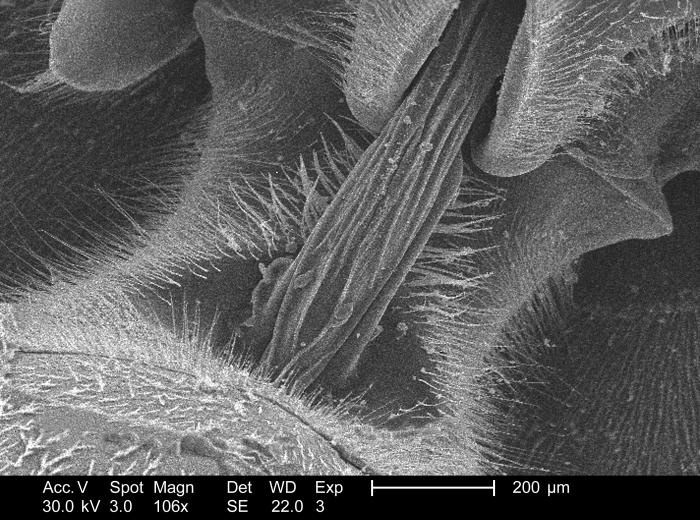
Magnified 106x, this 2005 scanning electron micrograph (SEM) depicted the morphologic characteristics associated with the 'cervix' of an unidentified deceased wasp found on the ground in the Decatur, Georgia suburbs. The cervix is for the most part, a membranous intersegmental connection, which serves to connect the head region with the thoracic region. More precisely it connects the occipital region of the head to the prothorax, i.e., most anterior thoracic segment. In the case of this specimen, note that the membranous cervix lies atop, or superior to the firm chitinous 'cervical sclerites', which provide support to the cervix, and an area to which musculature may attach.